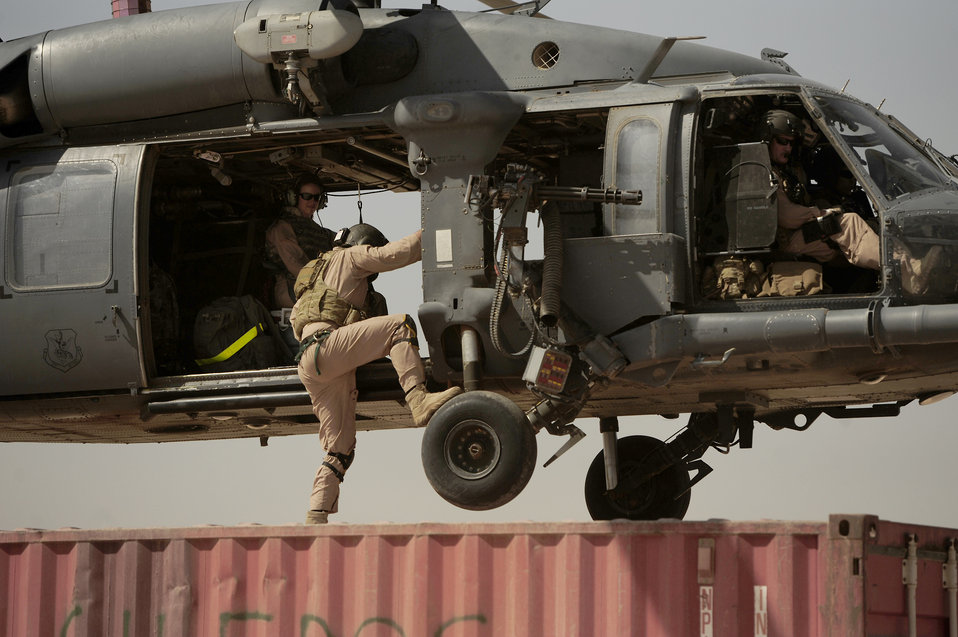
Pave Hawk mission over Iraq

Staff Sgt. Aaron Walton climbs into the helicopter before takeoff July 12, 2010, at Joint Base Balad, Iraq. Sergeant Walton is a flight engineer assigned to the 64th Expeditionary Rescue Squadron.